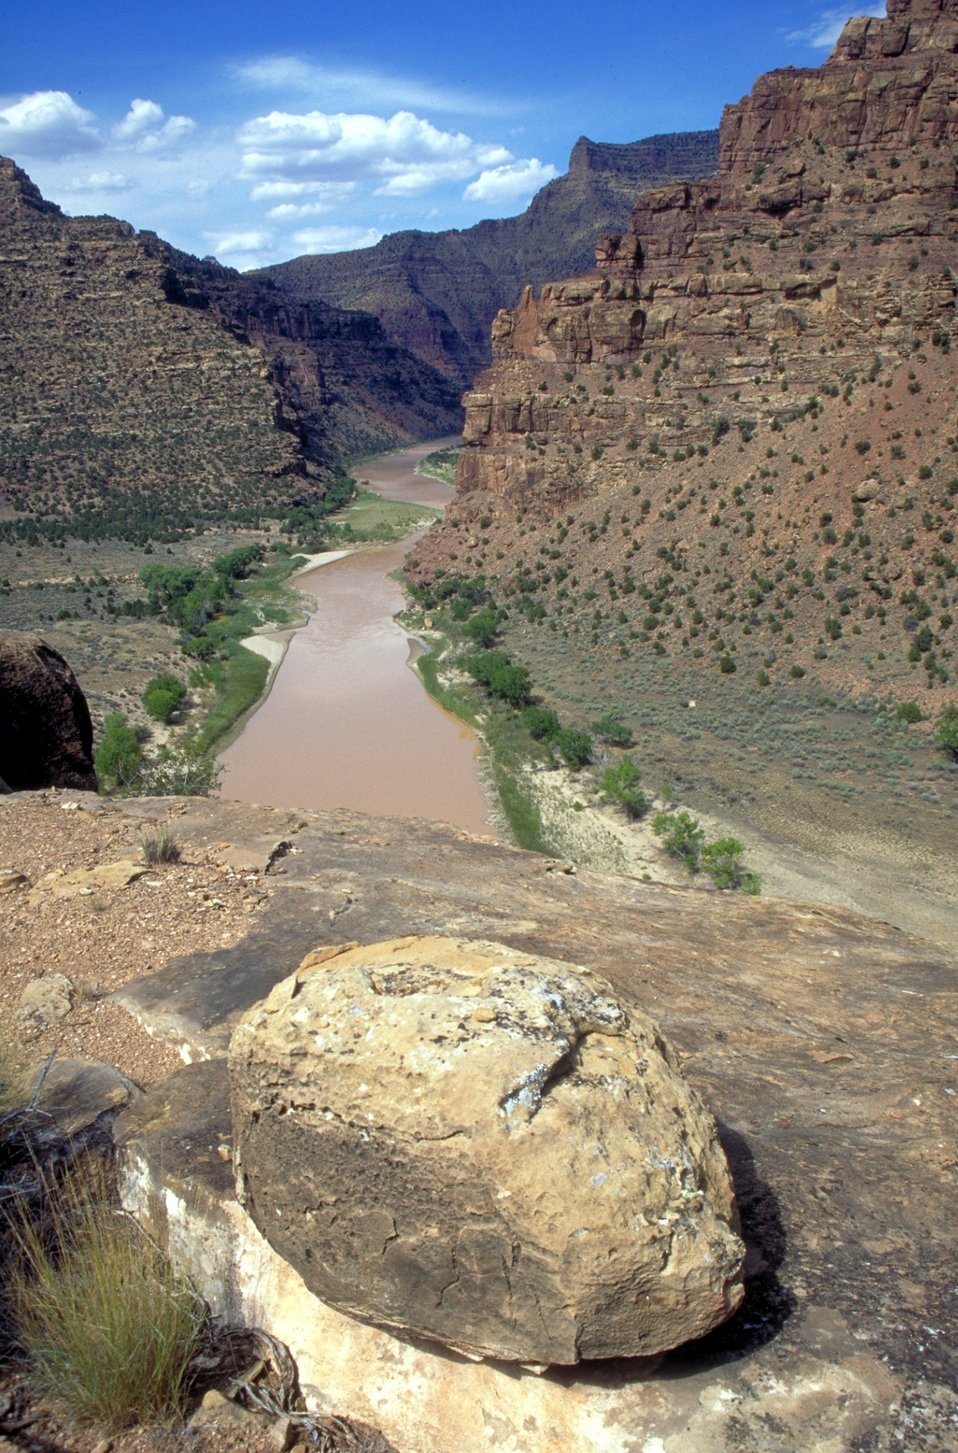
Desolation/Gray Canyons near Price, Utah.